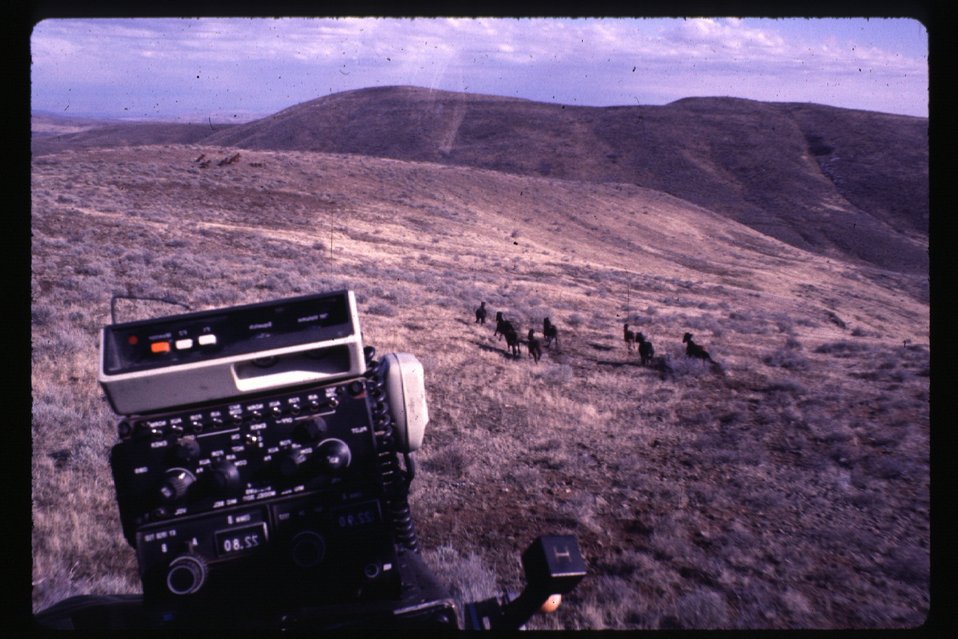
Wild horse roundup by helicopter Wild Horse and Burro Adoption Program LSRD Lower Snake River District